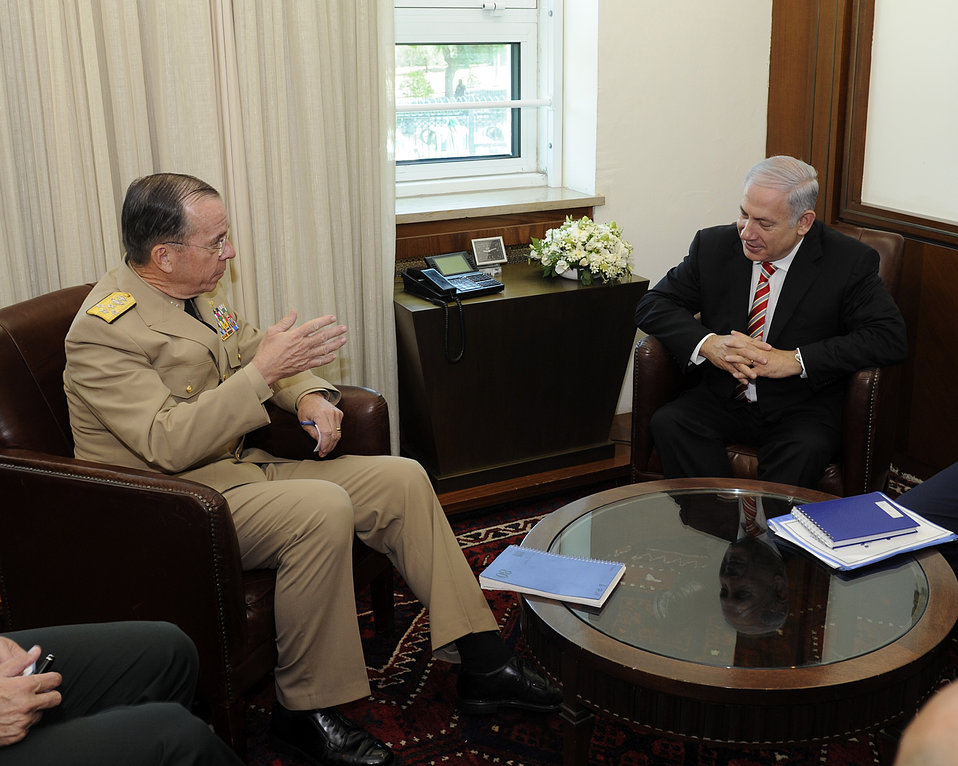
Admiral Mullen Meets With Israeli Prime Minister Netanyahu

Admiral Michael Mullen, Chairman of the Joint Chiefs of Staff of the U.S. Military, meets with Israeli Prime Minister Benjamin Netanyahu, in Jerusalem on July 19.